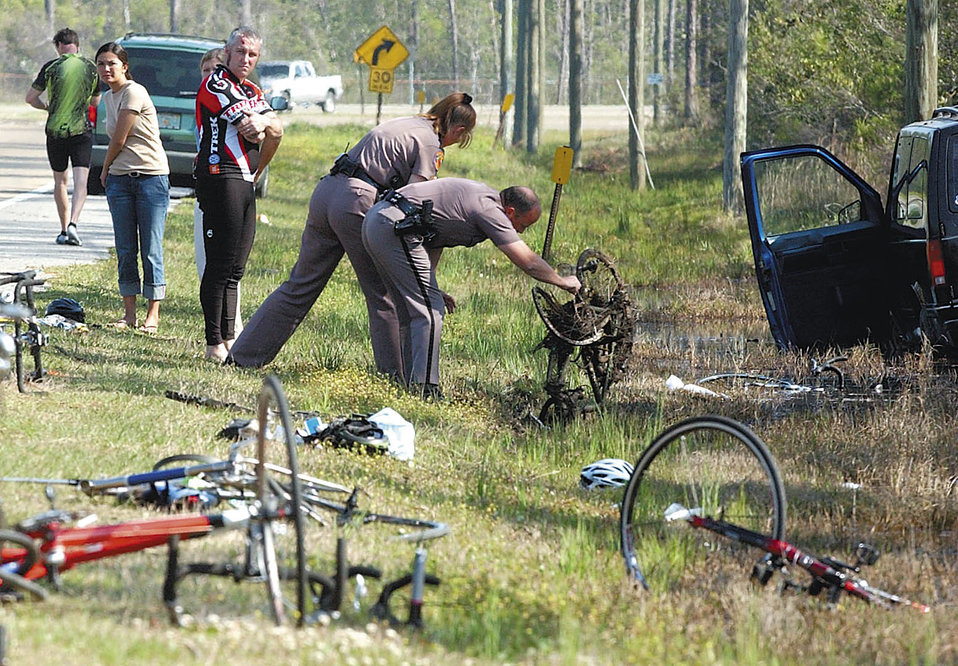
Hurlburt Field rescuers help crash victims, save lives

FORT WALTON BEACH, Fla. -- Cyclists watch as state troopers pick up the mangled remains of a bicycle here April 9. A driver hit five of eight cyclists who were standing outside a convenience store waiting for a flat tire to be fixed. She was charged with one count of driving under the influence for serious bodily injury and four counts of DUI for personal injury.